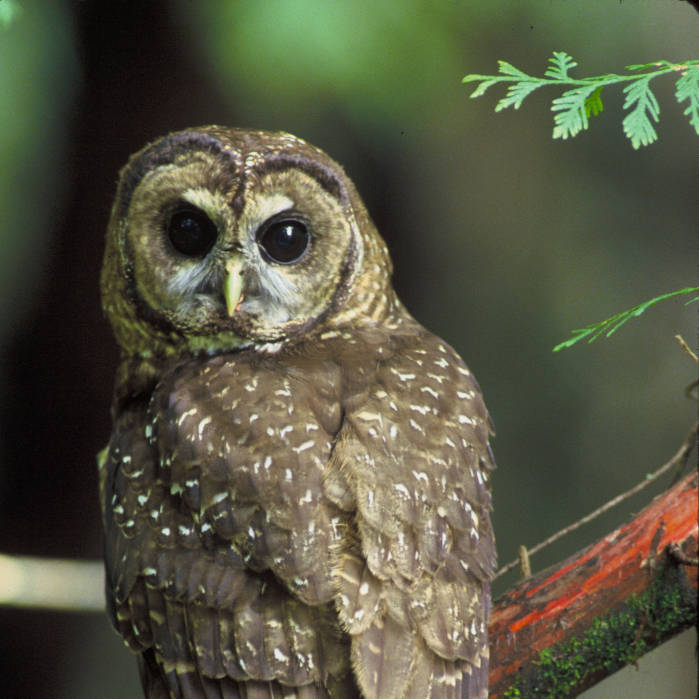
Spotted Owl

A Northern Spotted Owl in the Mackenzie River Basin in Oregon.